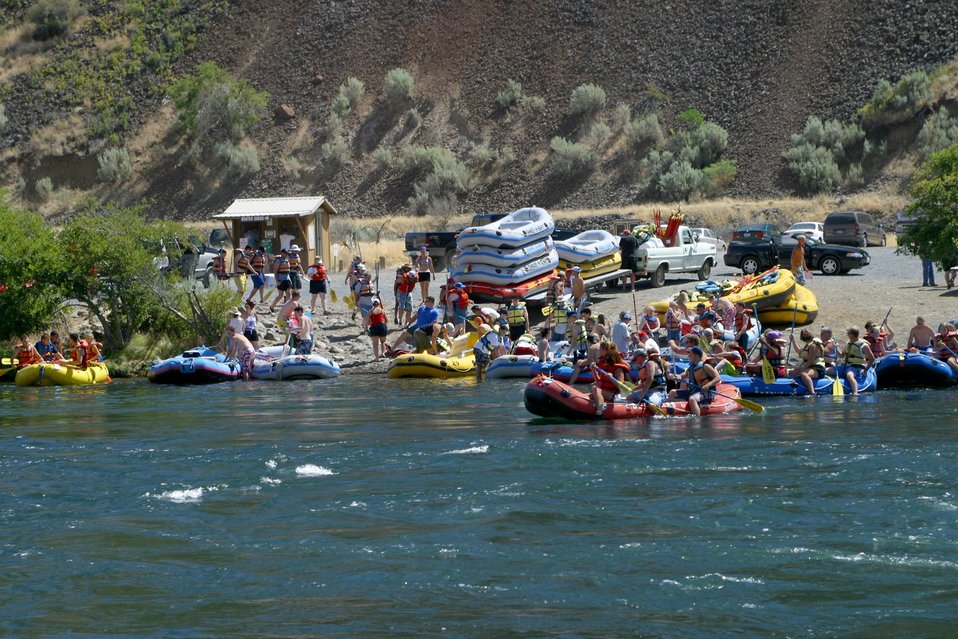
Over 200,000 people a year float the Lower Deshutes River.